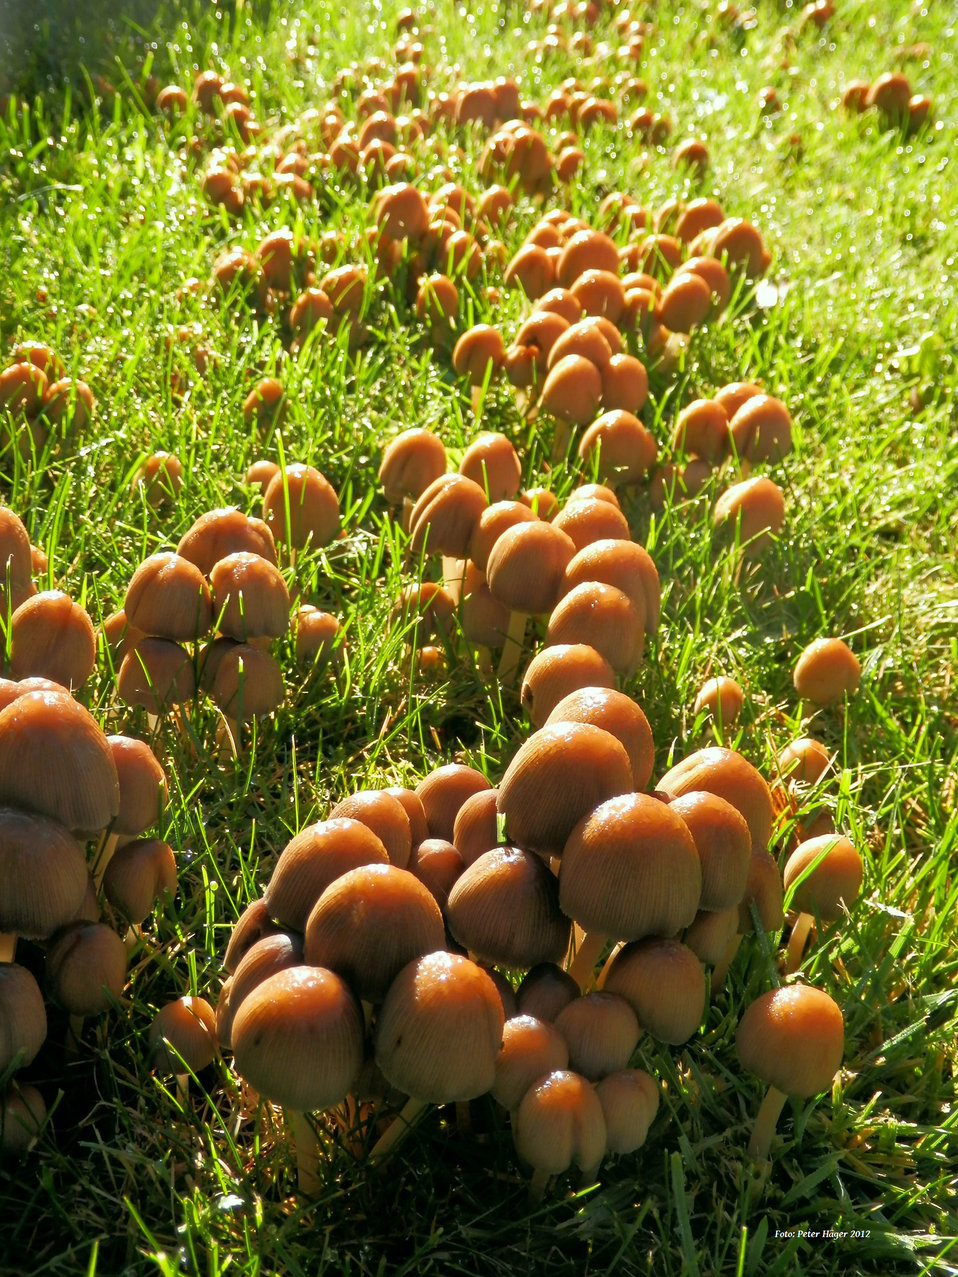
Mushrooms

A whole bunch of mushrooms.